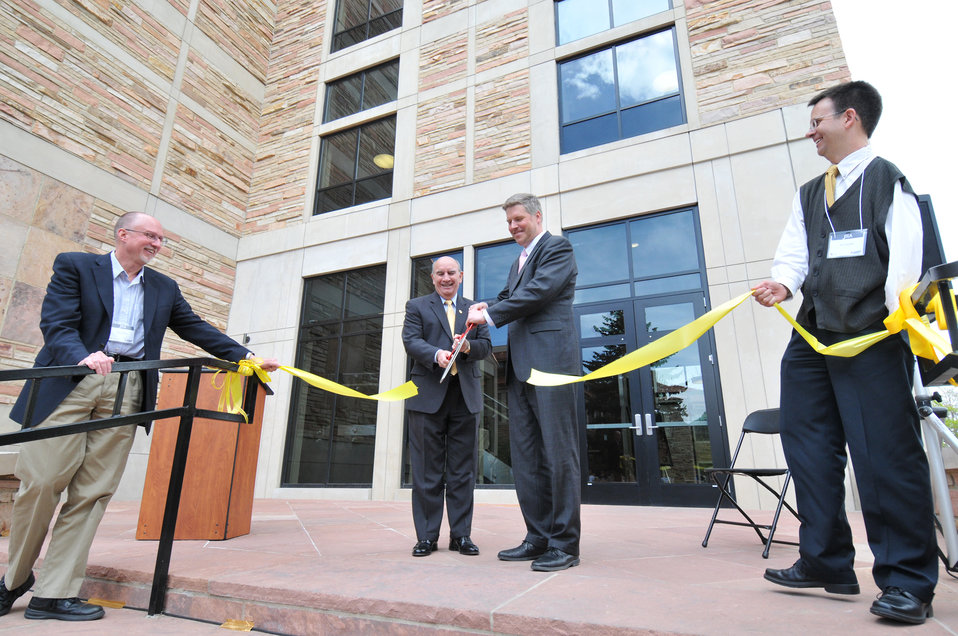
JILA X-Wing Ribbon Cutting

Ribbon cutting to dedicate the new JILA X-Wing addition at the University of Colorado Boulder. Left to right: Tom O'Brian, chief of the NIST Quantum Physics Division; Philip DiStefano, Chancellor of the University of Colorado Boulder; NIST Director Patrick Gallagher; and Eric Cornell, JILA Department Chair and Nobel Laureate.